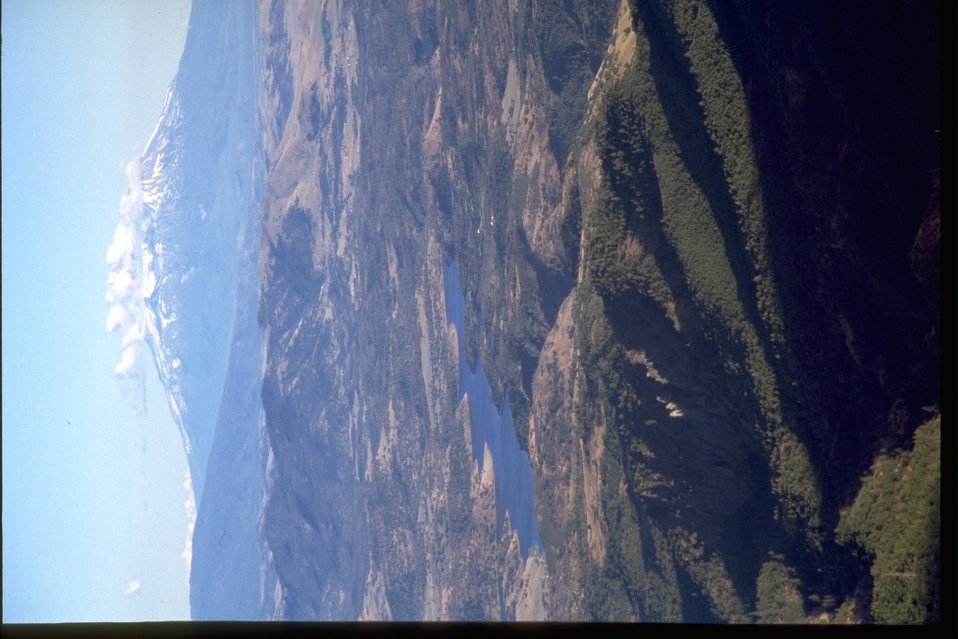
Soda Mountain Wilderness Study Area, dropping into Soda Valley with Irongate Reservoir.